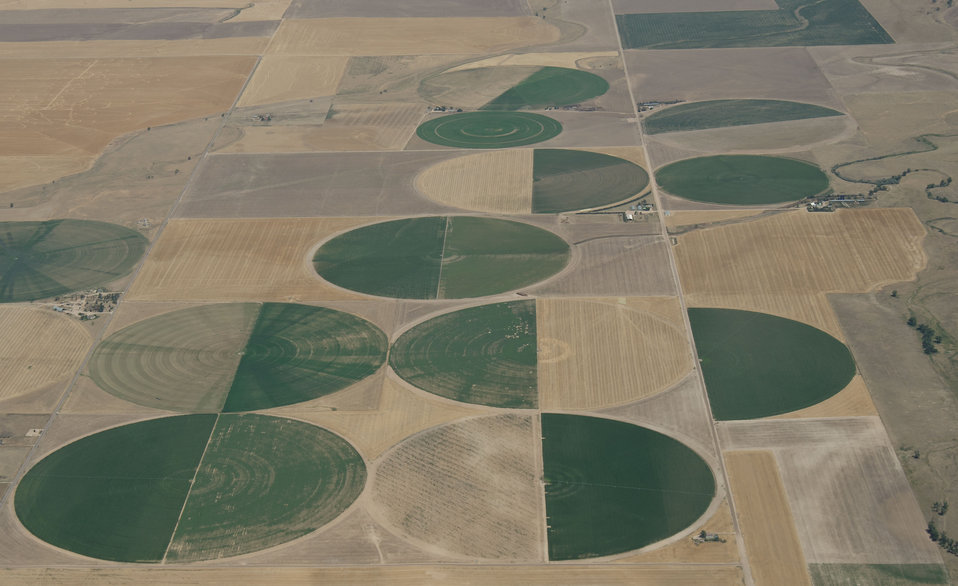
Aerial views of drought affected Colorado farm lands, 83 miles east of Denver, Colorado on Saturday, July 21, 2012. Green areas are irrigated, the yellow areas are dryland wheat crops.